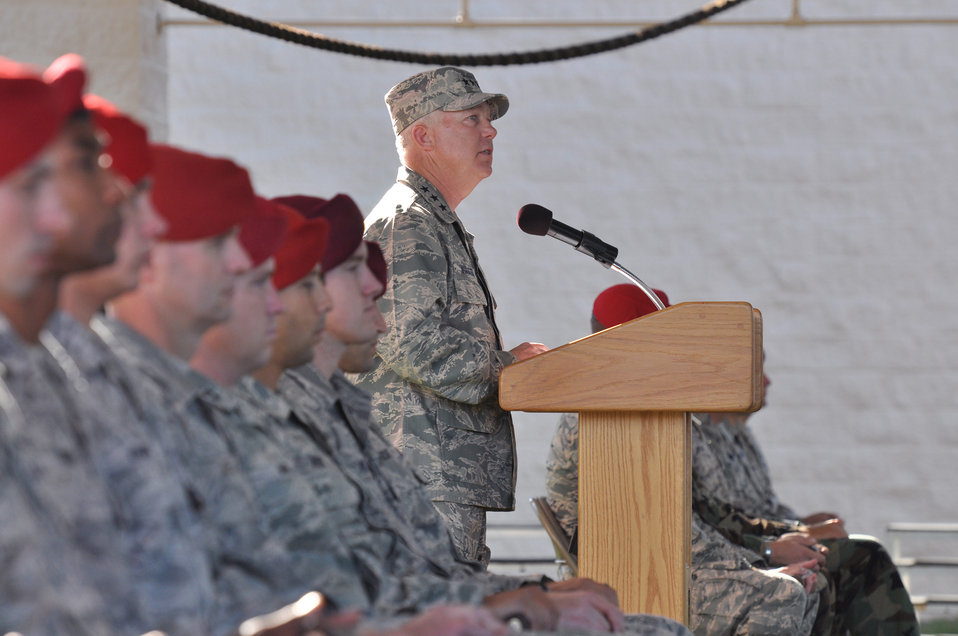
Special Tactics Memorial March

Lt. Gen. Donald C. Wurster speaks to the audience Oct. 21, 2010, during a ceremony after the completion of the Tim Davis Special Tactics Memorial March from Lackland Air Force Base, Texas, to Hurlburt Field, Fla. Fifteen special tactics Airmen completed the 860-mile trek to honor the memories of their fallen comrades. General Wurster is the commander of Air Force Special Operations Command.